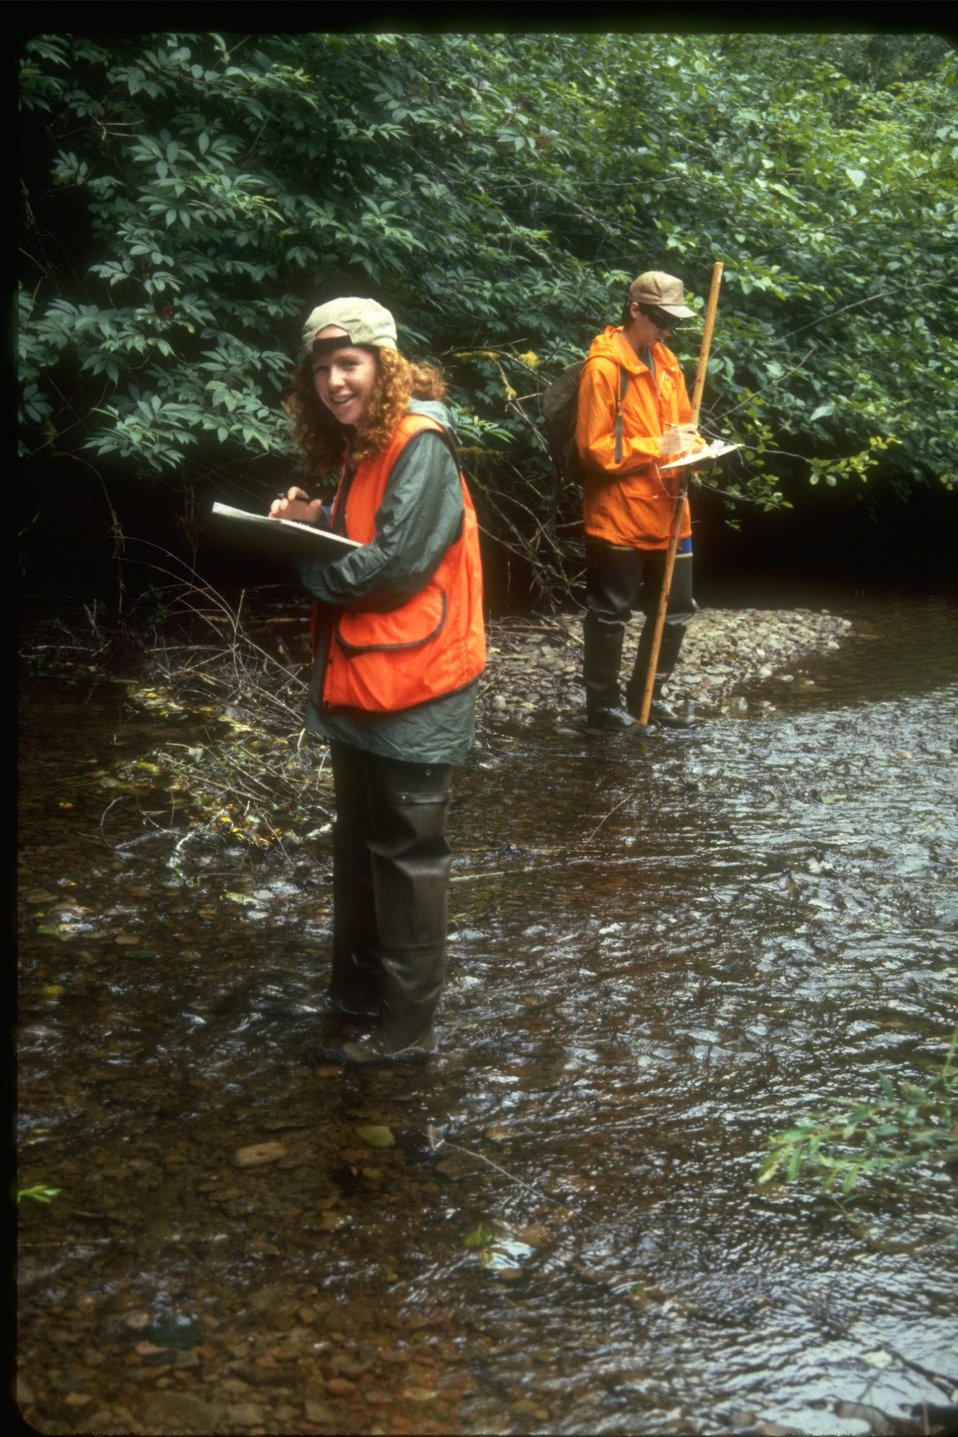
Volunteers from a fishery.